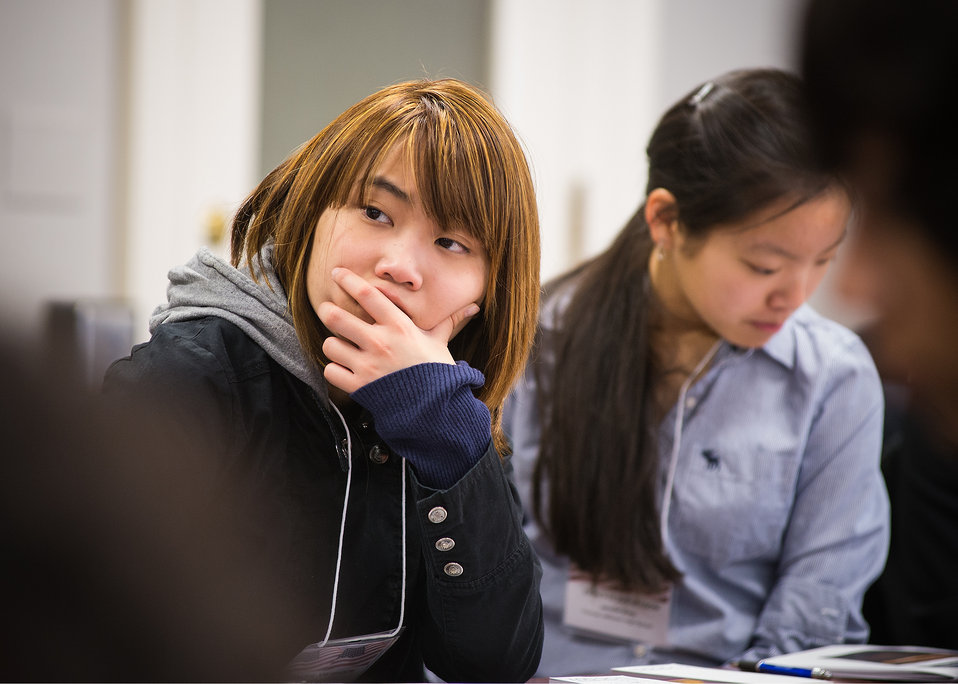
Thai Le, a student from Thomas Jefferson High School of Science and Technology in Alexandria, VA. listens to a speaker during the U.S. Department of Agriculture (USDA), Office of the Chief Information Officer (OCIO) IT Job Shadow Day, Tuesday, Mar. 25, 2014. The OCIO IT Job Shadow Day hosts students from local high schools in the Washington, D.C. area annually with IT professionals and agricultural specialists from a variety of mission areas at USDA.